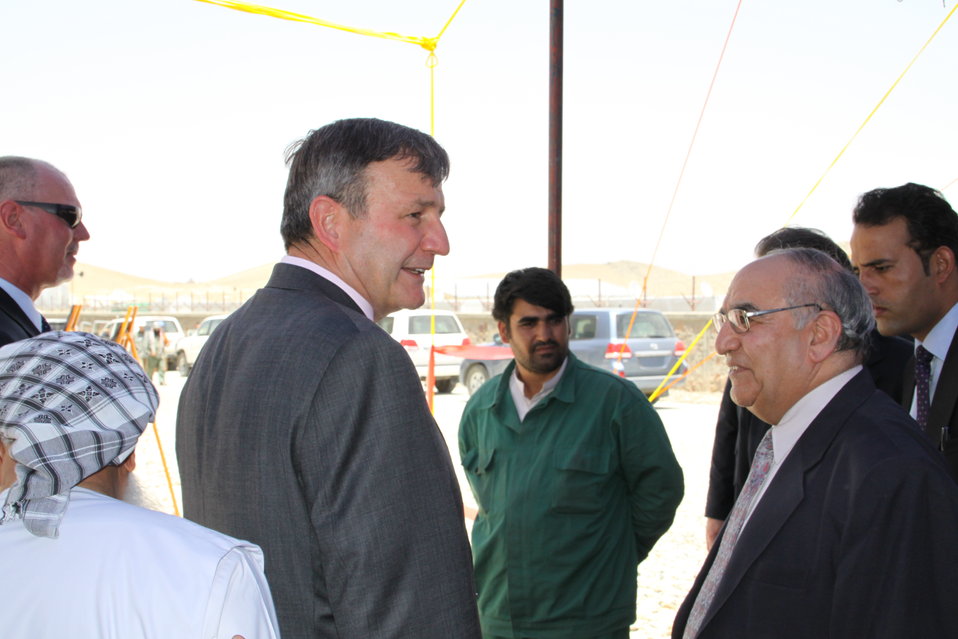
105 MW Tarakhil Power Plant Handover